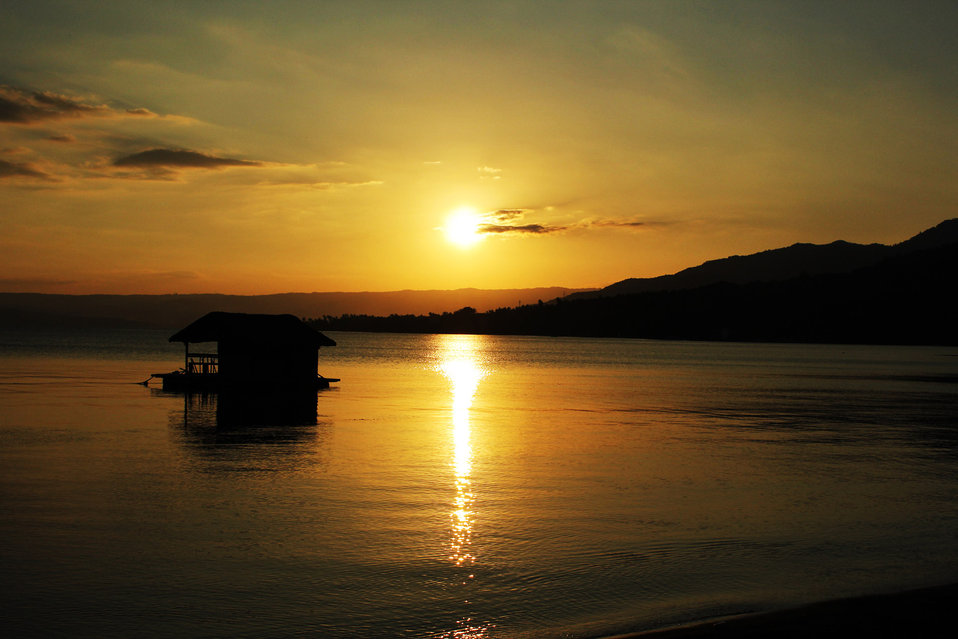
Awesome and stunning sunset

Awesome sunset.